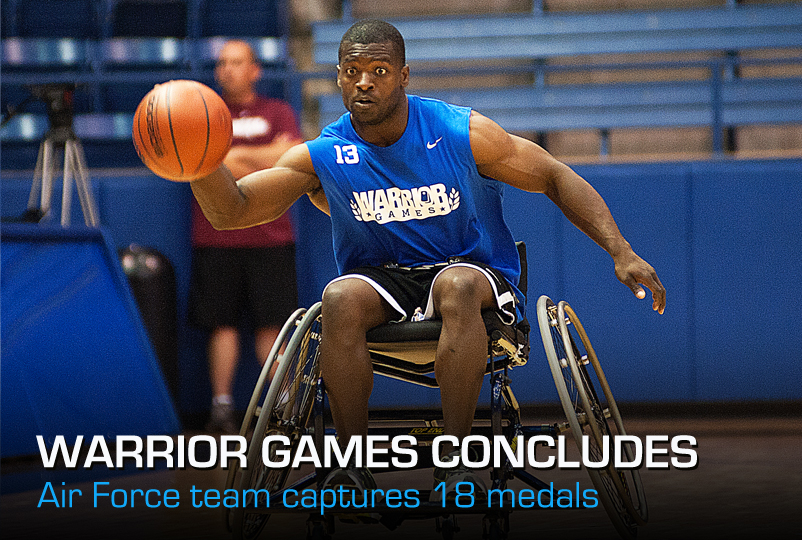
Warrior Games Concludes